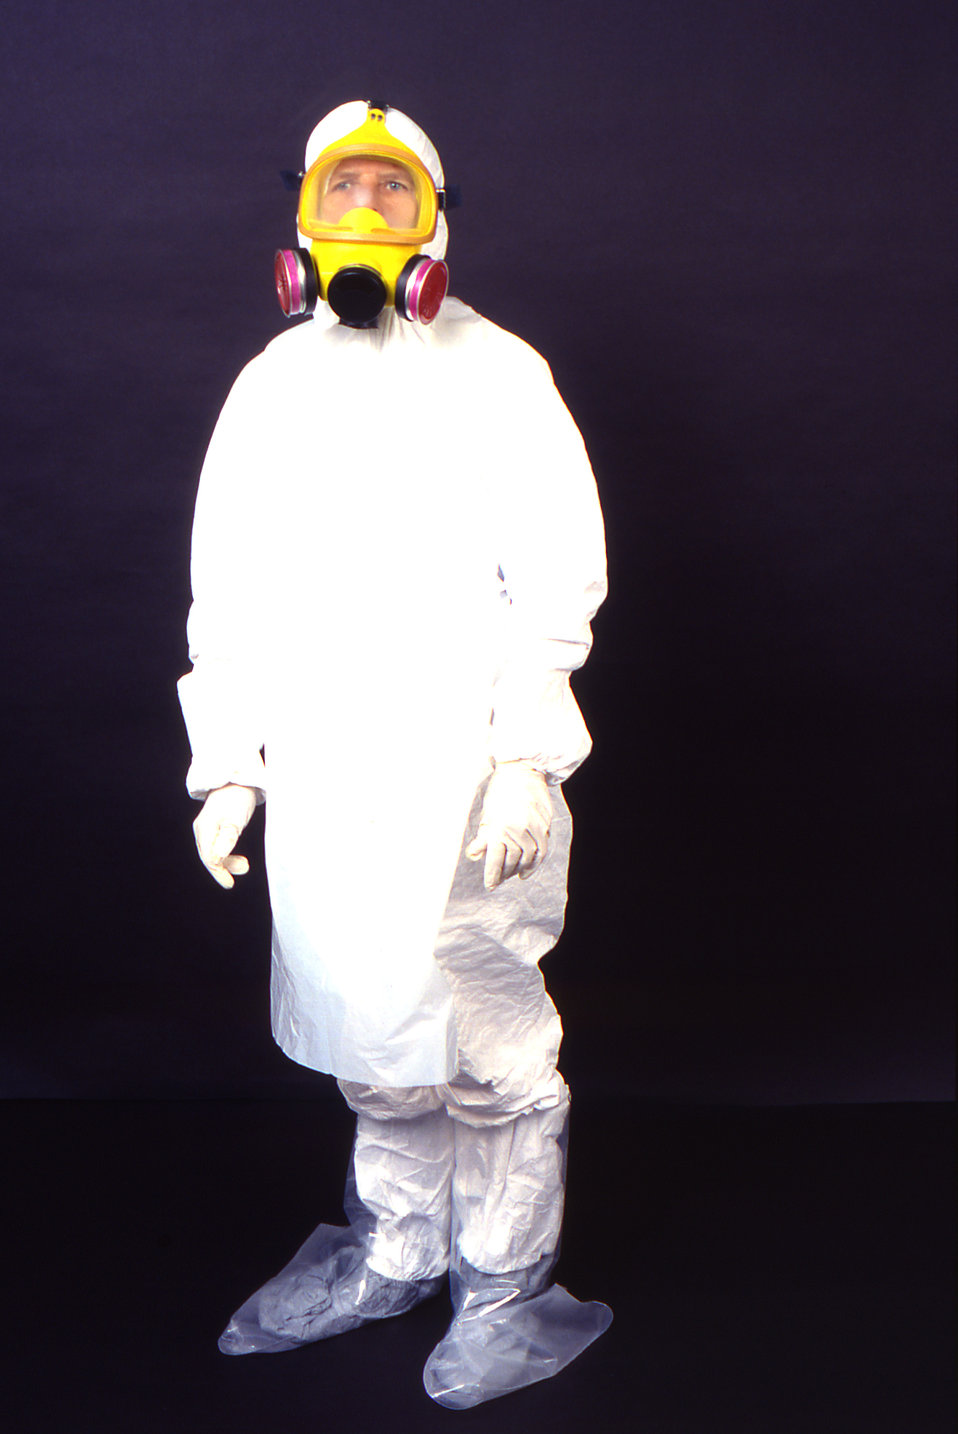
This 1995 image depicts a left anterior-oblique view of a laboratory technician wearing garments usually worn by field techs including a disposable white coverall, a disposable plastic apron, head covering, latex gloves and foot coverings, and a filtered respirator face mask.